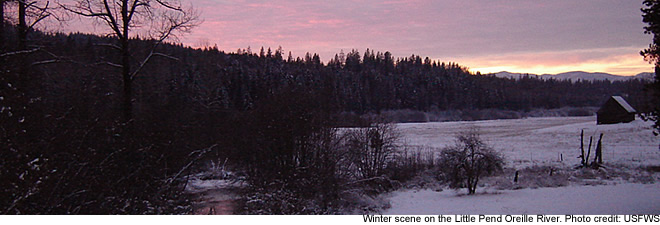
Little Pend Oreille River - Little Pend Oreille NWR